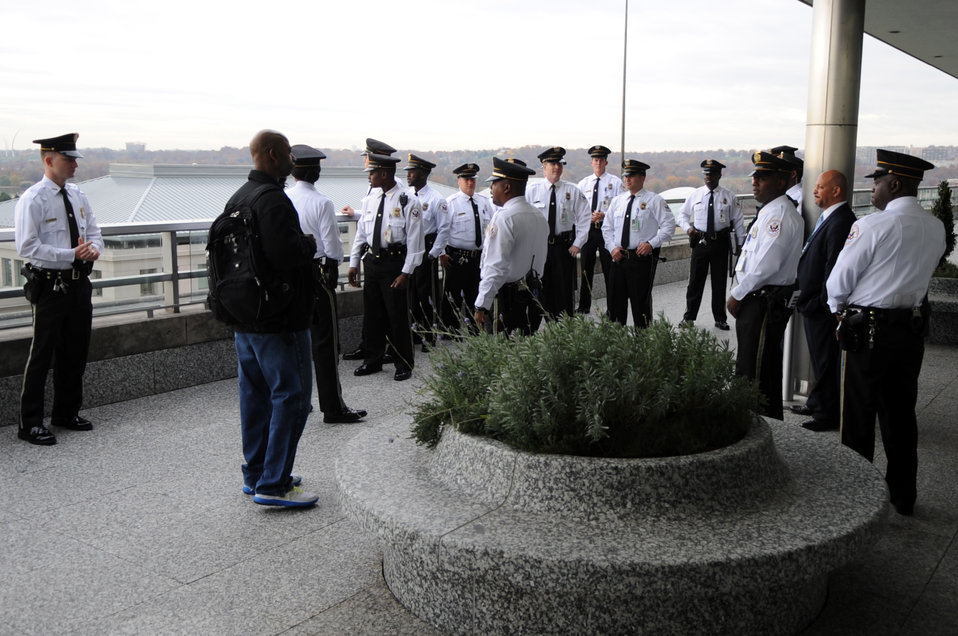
New Members of the State Department's Uniformed Division Are Briefed

New members of the Department of State's Uniformed Division get a briefing on November 22, 2013, about how to secure the 8th-floor Terrace at the Harry S. Truman Building in Washington, D.C.